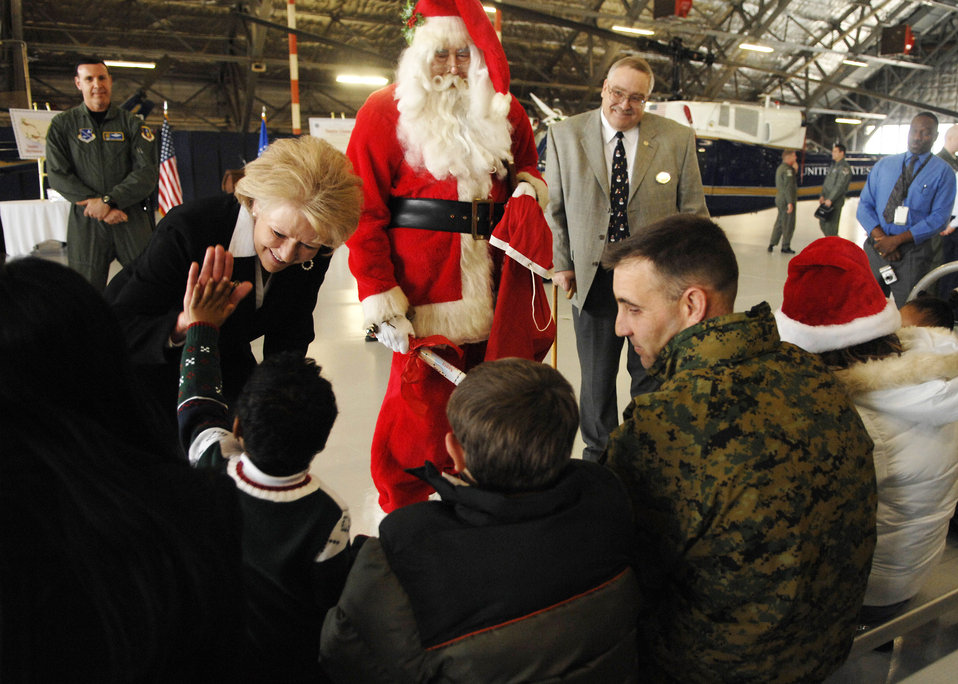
Transportation secretary opens military airspace for Santa

Secretary of Transportation Mary E. Peters and Santa Claus talk to military members and their children Dec. 18 at Andrews Air Force Base, Md. Secretary Peters and Santa were on base signing documents allowing Santa to fly in special military airspace called